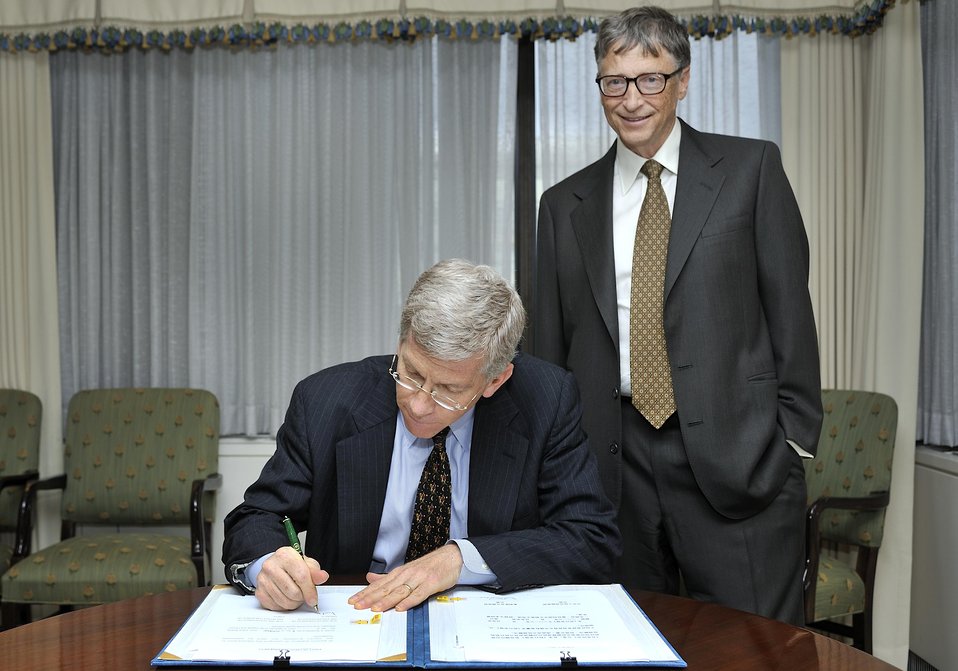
Ken Shipp/DOE Photo

Deputy Secretary D. Poneman is visited by W. (Bill) H. Gates, founder, technology advisor of Microsoft Corporation at The Department of Energy on October 8, 2013.